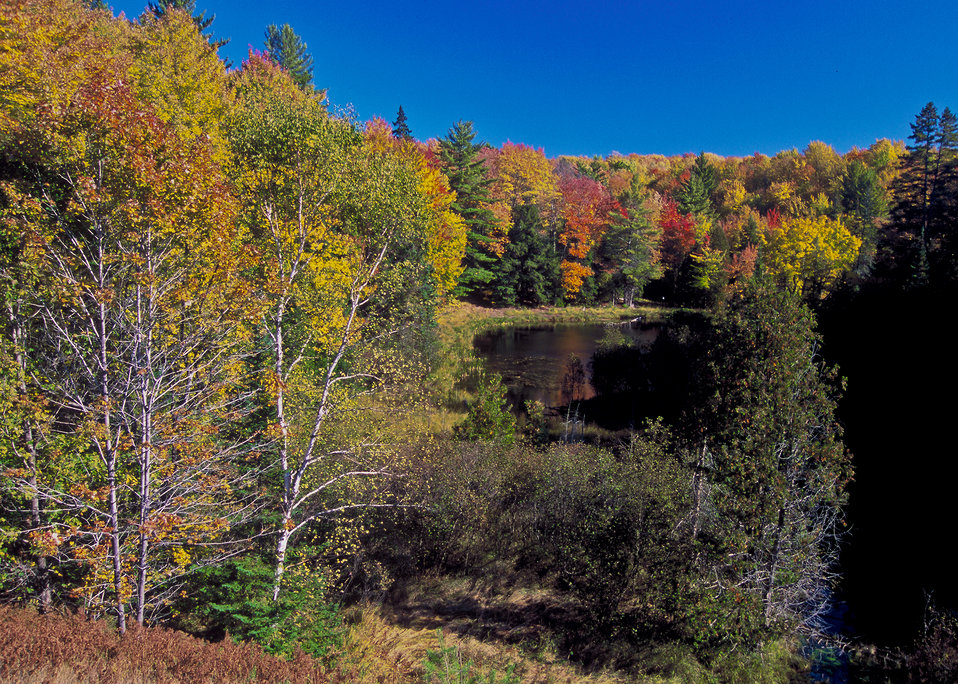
The Hiawatha National Forest on the Upper Peninsula of Michigan. North, South, East or West the National Forests are a great natural resource to be enjoyed.